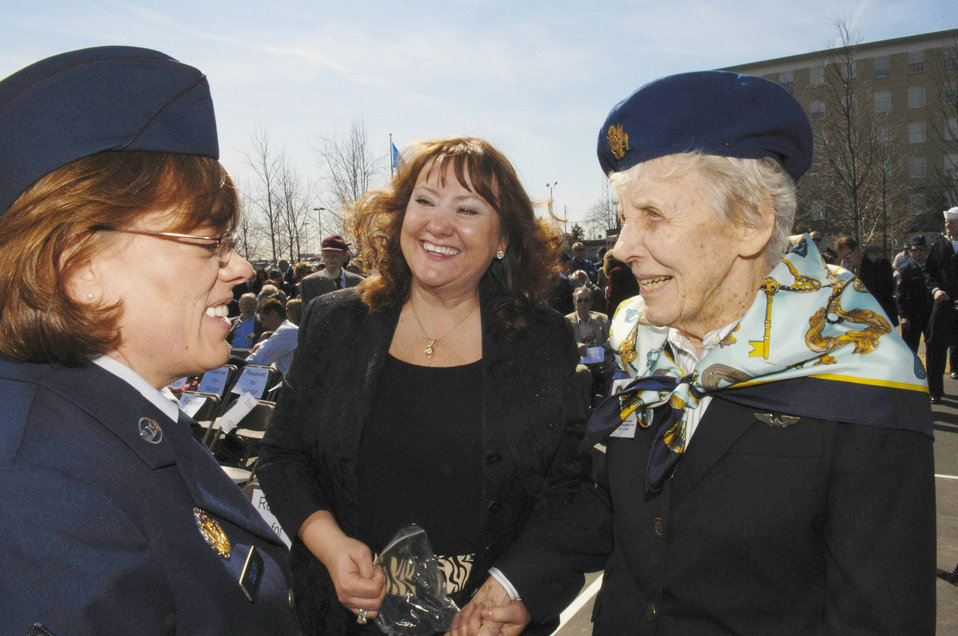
Female World War II pilots lay wreath at Air Force Memorial

Chief Master Sgt. Beth Sieloff (left) shares a light moment with Women Airforce Service Pilot member Virginia Wise (right) and Ms. Wise's escort, Penny Hunt, before a wreath-laying and remembrance ceremony March 9, 2010, at the Air Force Memorial in Arlington, Va.